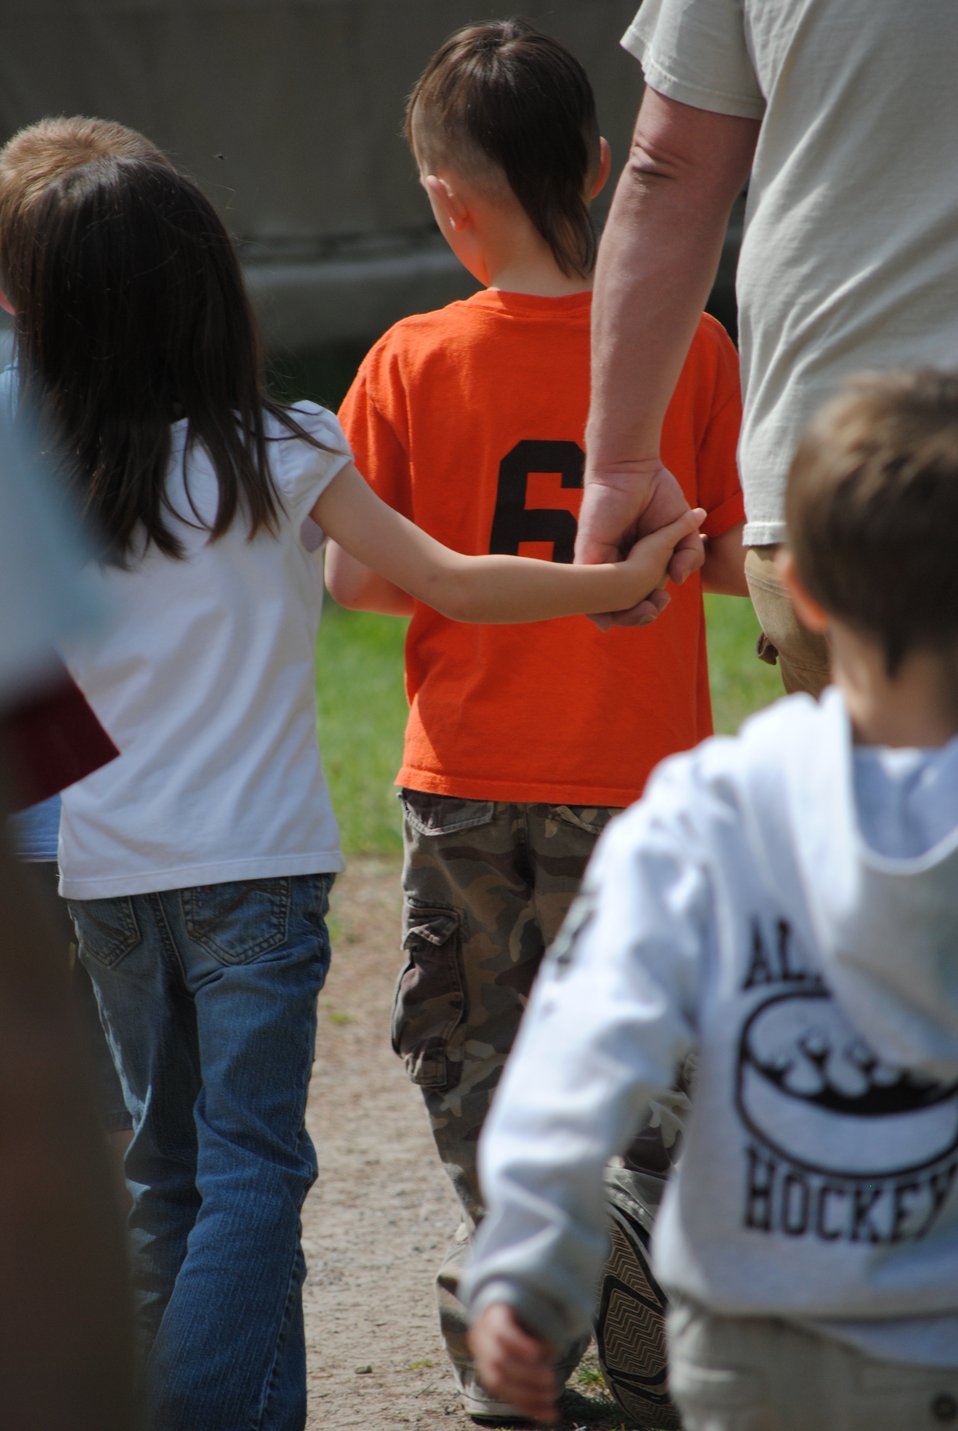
Creston National Fish Hatchery Provide many Educational Opportunities for Area Schools and Families